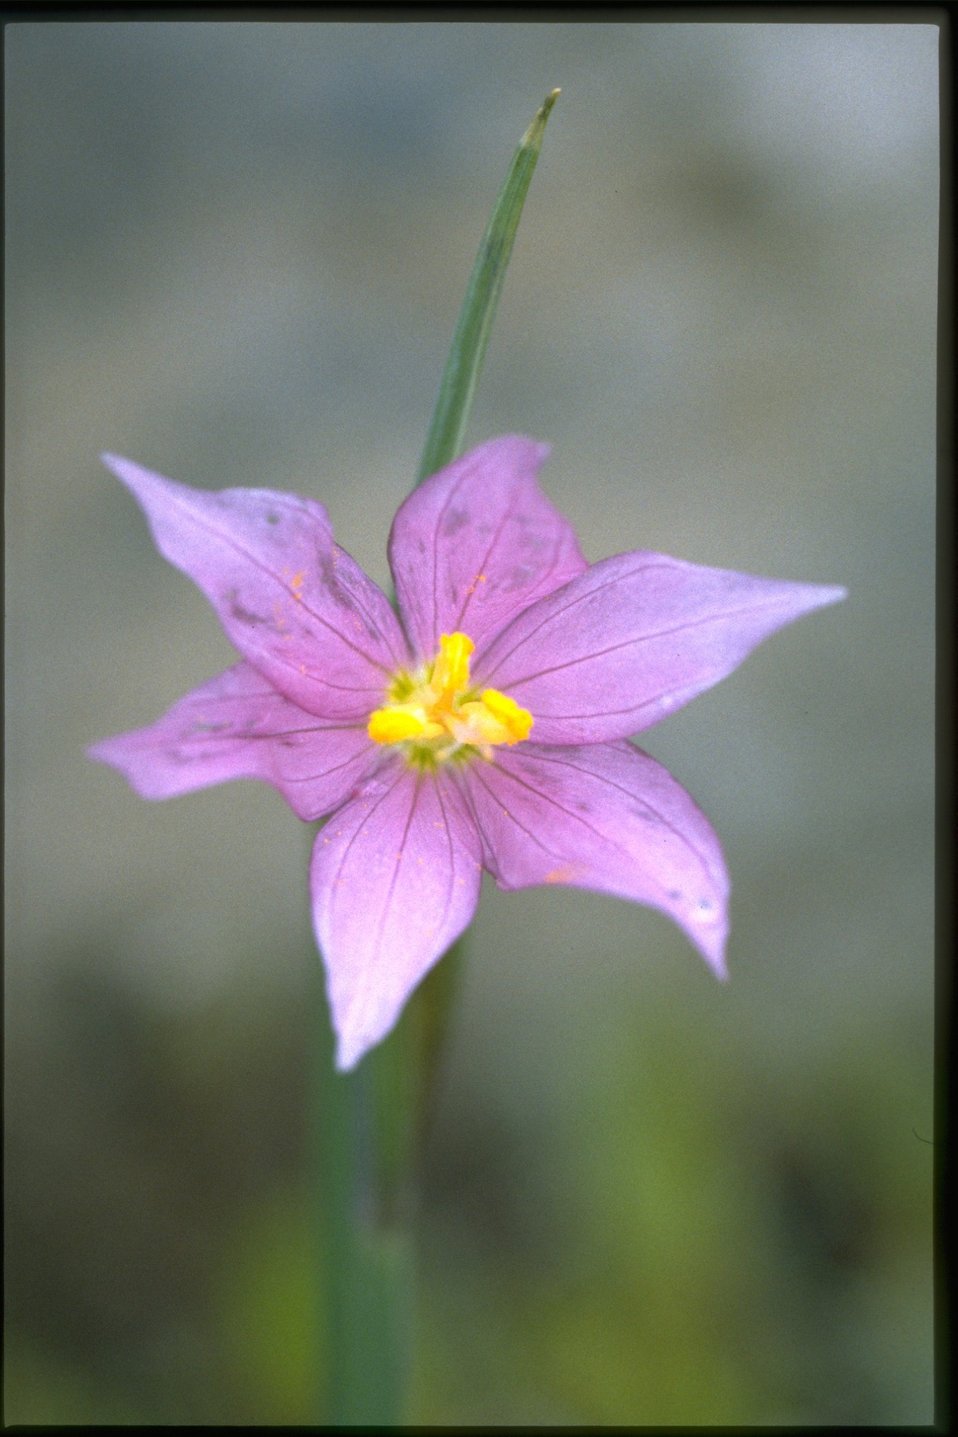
Closeup shot of Grass Widow, Sisyrinchium Douglasii, wildflower.